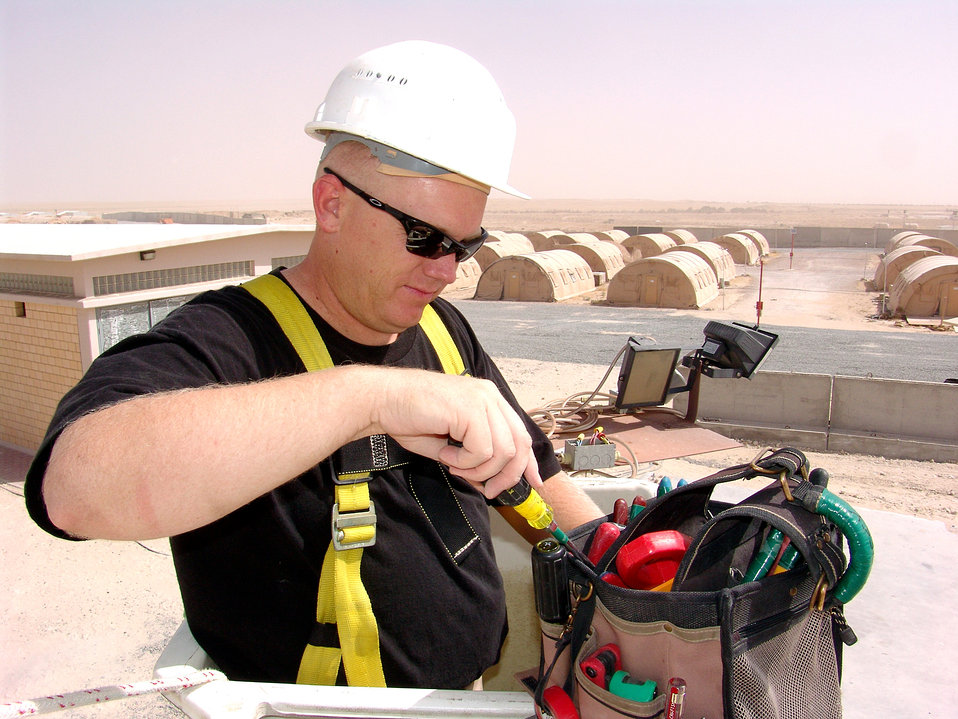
Operation IRAQI FREEDOM

SOUTHWEST ASIA -- Staff Sgt. Gary Moss prepares to replace a broken light fixture inside tent city at a forward operating location. Sergeant Moss is deployed to the 386th Expeditionary Civil Engineer Squadron from Misawa Air Base, Japan.